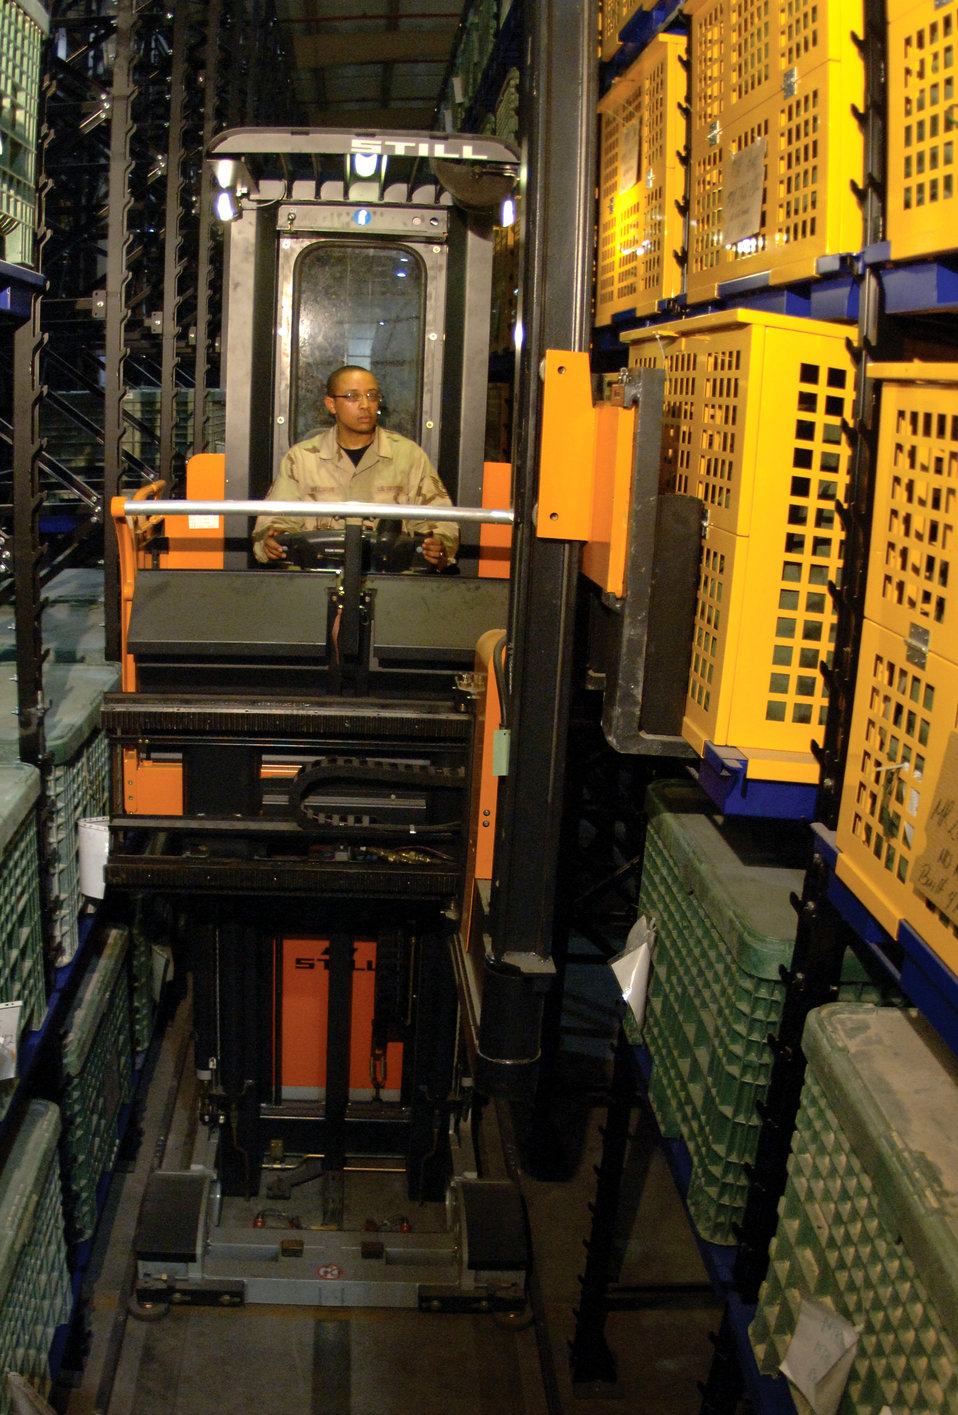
Center saves millions, improves warfighting abilities

Tech. Sgt. Robert Williams picks up cargo from the Expeditionary Theater Distribution Center at a deployed location in Southwest Asia on Thursday, May 18, 2006. Sergeant Williams is with the 379th Expeditionary Logistics Readiness Squadron and is deployed from Ramstein Air Base, Germany.